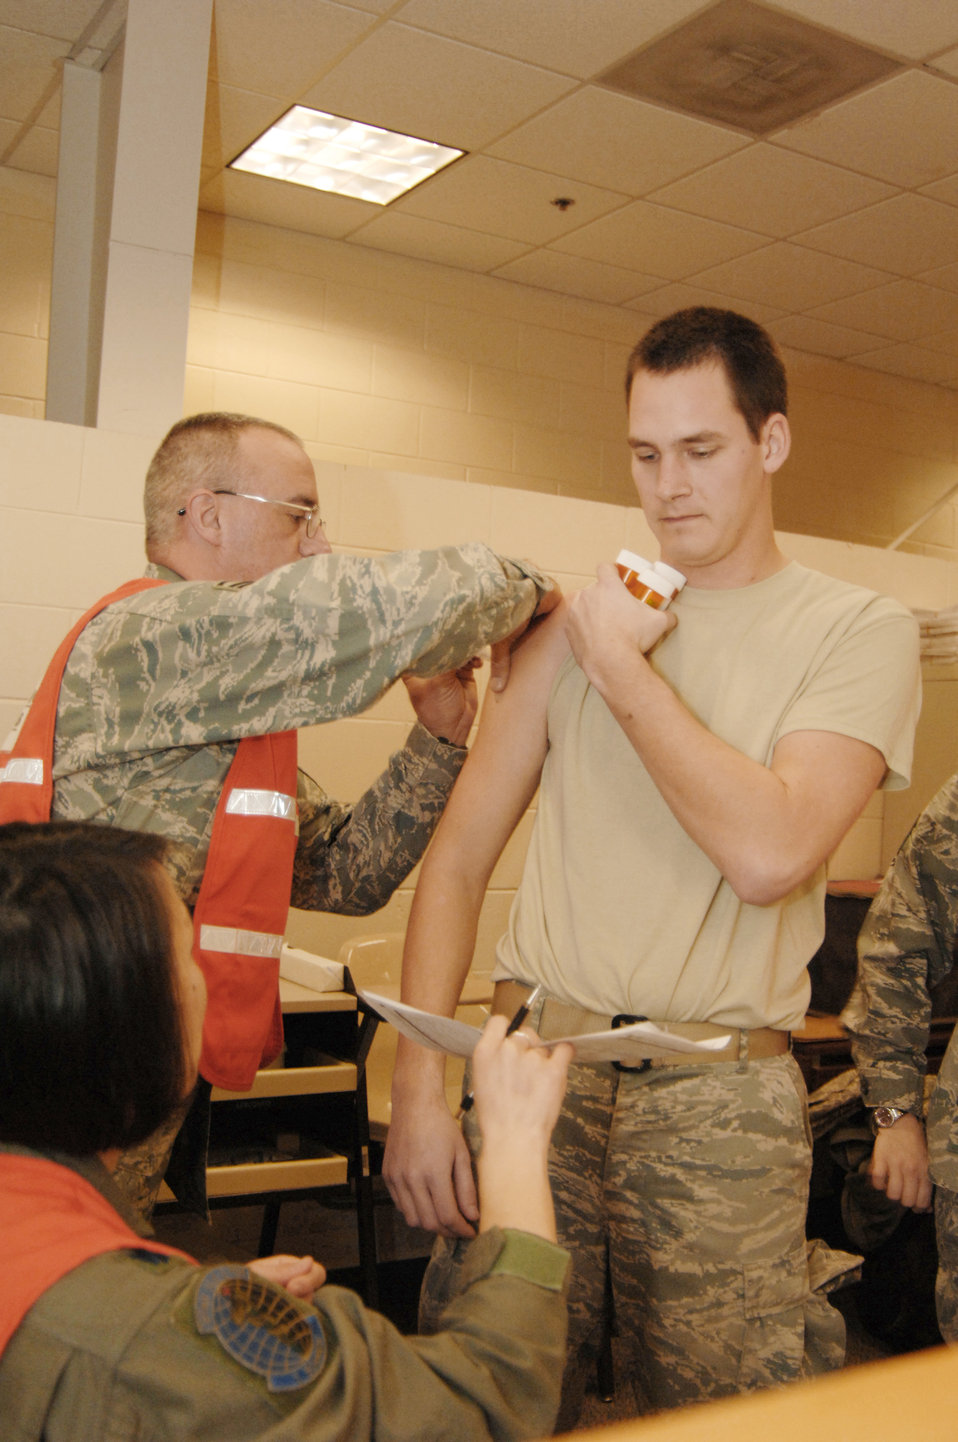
Hurlburt Field Airmen prepare to assist in Haiti

Airman 1st Class Anthony Morio receives an immunization while processing through a mobility line Jan. 13, 2010, at Hurlburt Field, Fla. Airman Morio is part of humanitarian relief mission to Haiti. He is assigned to the 1st Special Operations Communications Squadron.